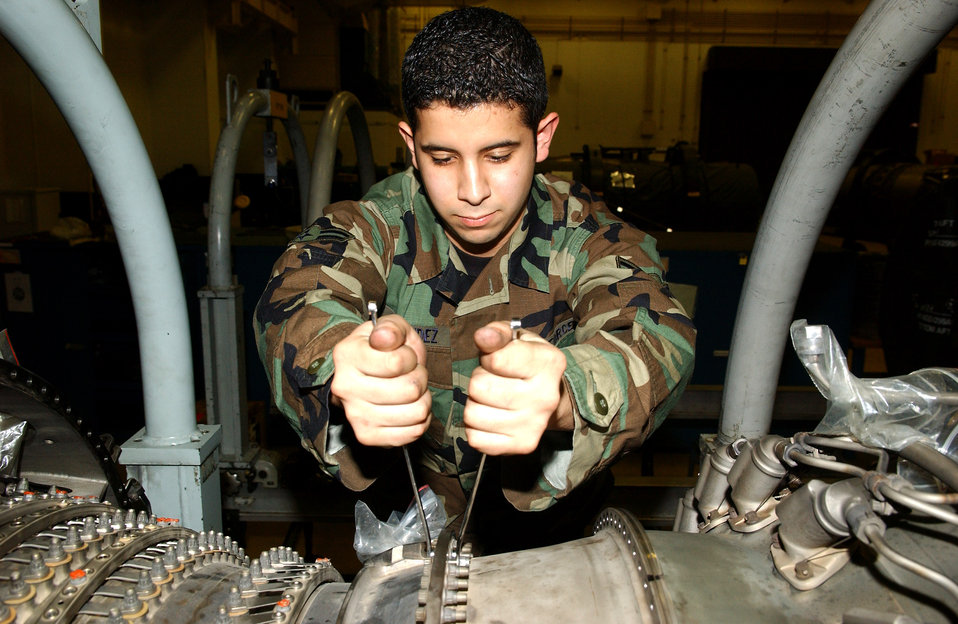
All in a day's work

Airman 1st Class Jonathan Mendez works on an F-16 Fighting Falcon jet engine. Airman Mendez is an F-16 crew chief with the 35th Maintenance Squadron at Misawa Air Base, Japan.